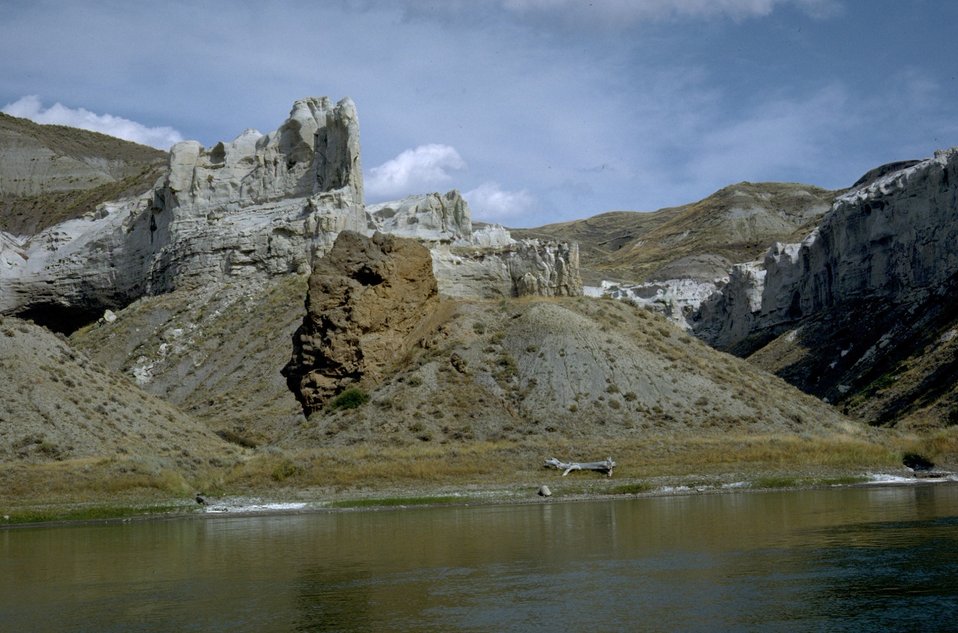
Missouri River